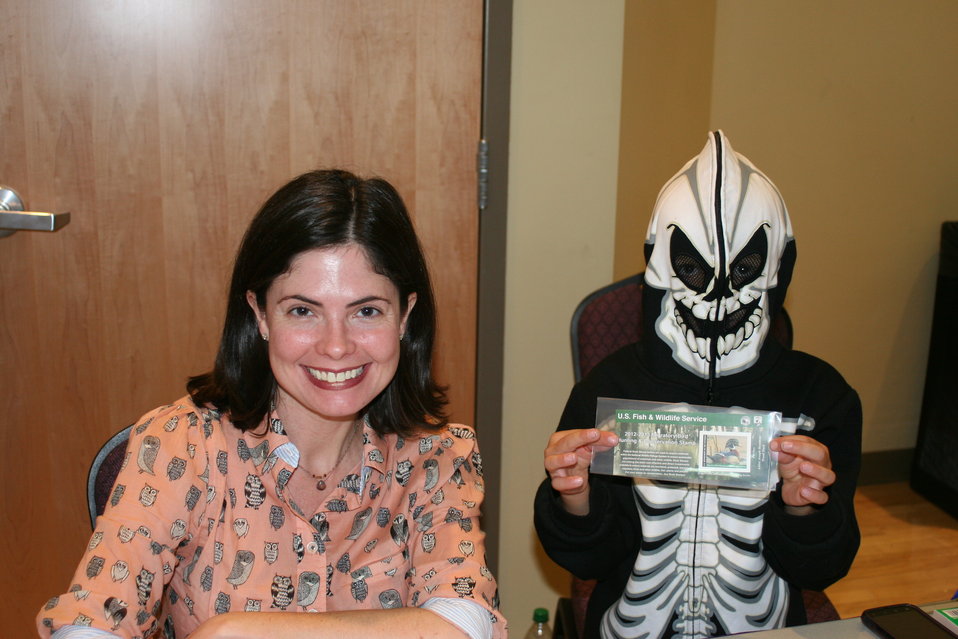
Even Skeletons Love Duck Stamps

Photo Credit: Suzanne Fellows / USFWS
The U.S. Fish & Wildlife Service sponsored the 2012 Federal Duck Stamp Art Contest September 28 and 29 in Ogden, Utah, at Weber State University. A panel of five judges was responsible for choosing the art work used to design the 2013-2014 Migratory Bird Hunting and Conservation Stamp.